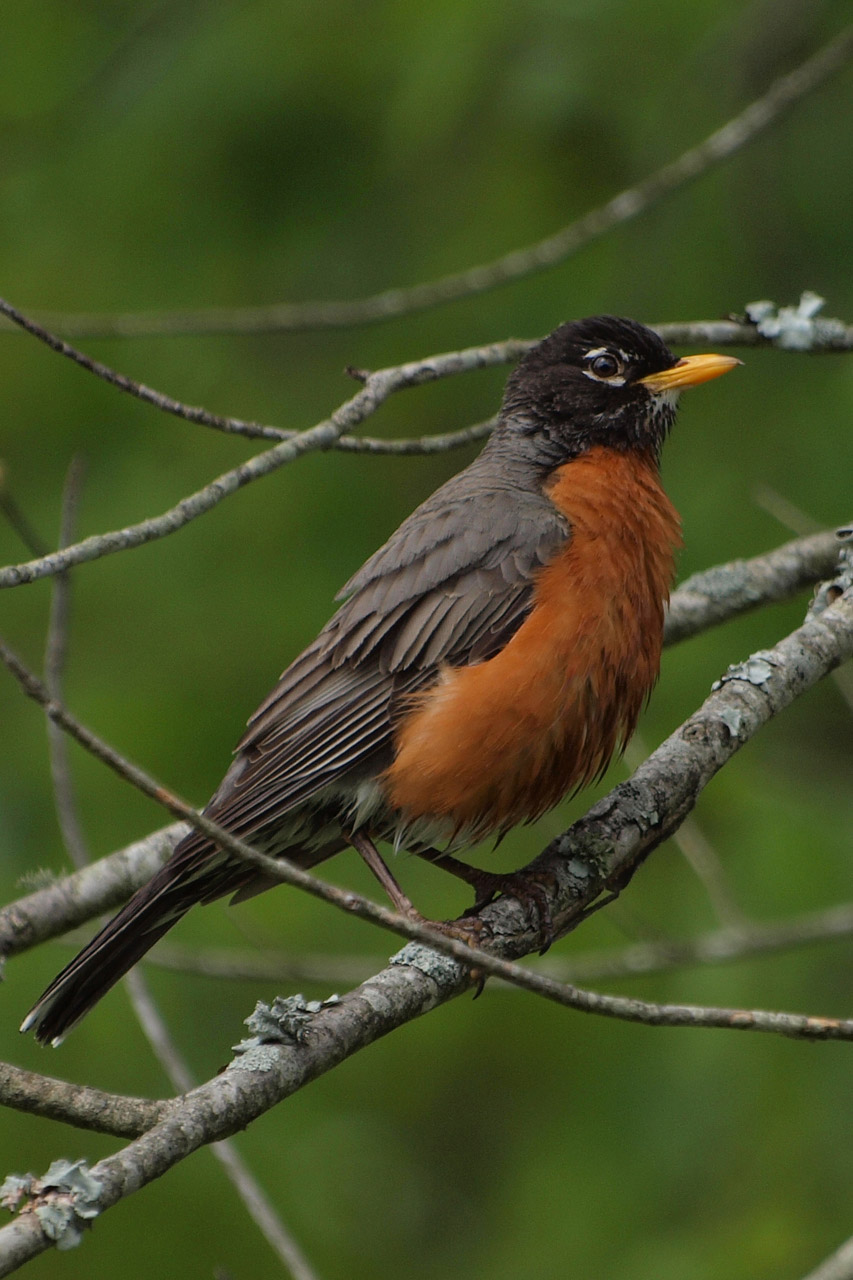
American robin - turdus migrotorius.